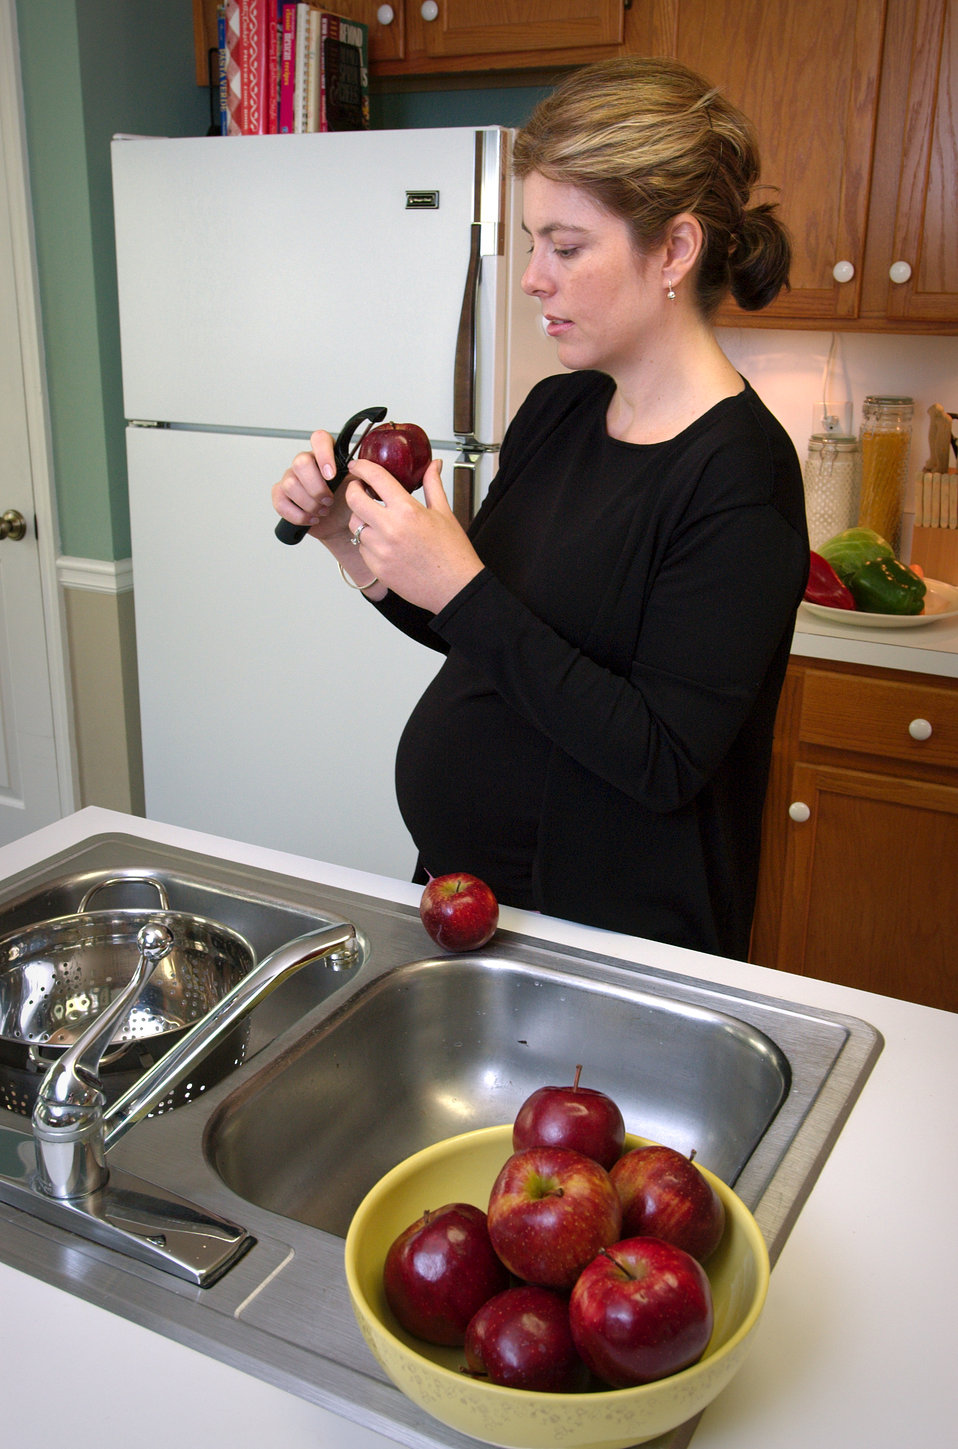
This photograph depicted a pregnant woman in the process of peeling an apple using a peeling implement after having washed a batch of apples in the kitchen sink. In order to avoid acquiring possible foodborne illness from eating a peeled food, one should wash such a food in warm soapy water prior to peeling, which will greatly reduce the chances of introducing a foodborne pathogen to the fruit's clean interior.Foodborne disease is caused by consuming contaminated foods or beverages. Many different disease-causing microbes, or pathogens, can contaminate foods, so there are many different foodborne infections. In addition, poisonous chemicals, or other harmful substances can cause foodborne diseases if they are present in food.